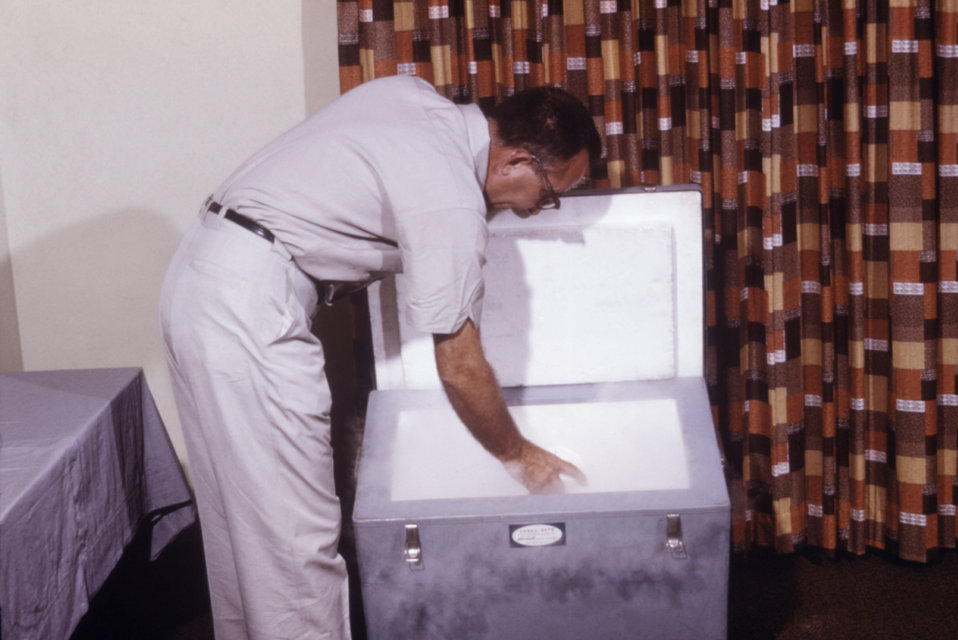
This CDC field researcher is placing pint cartons containing mosquito-filled tubes into a freezer to preserve the specimens.